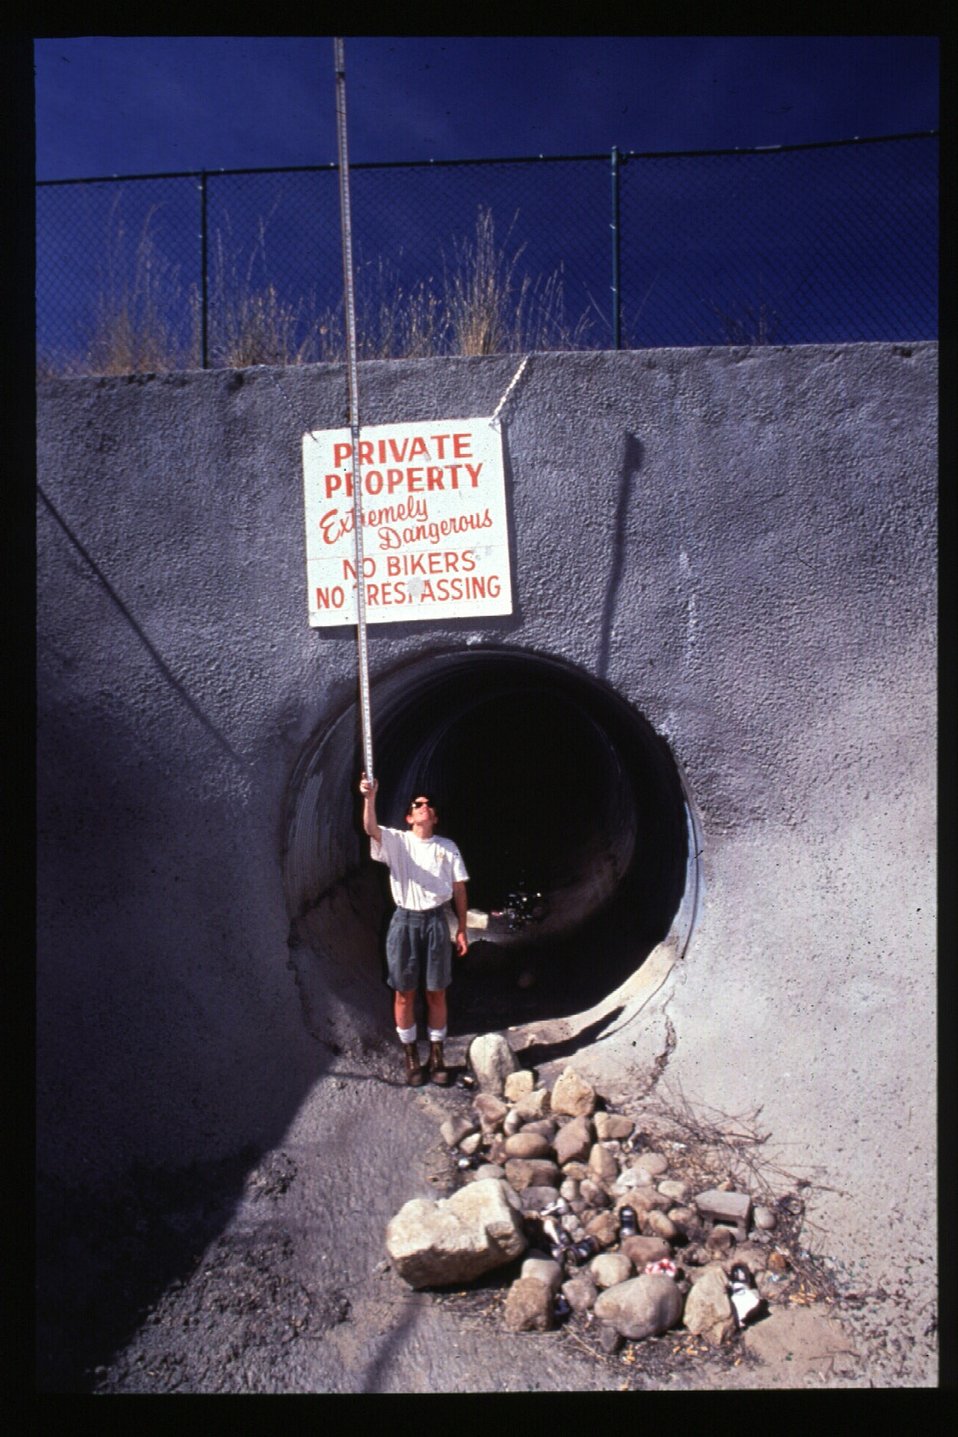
8th Street Fire Four Rivers Field Office LSRD Lower Snake River District